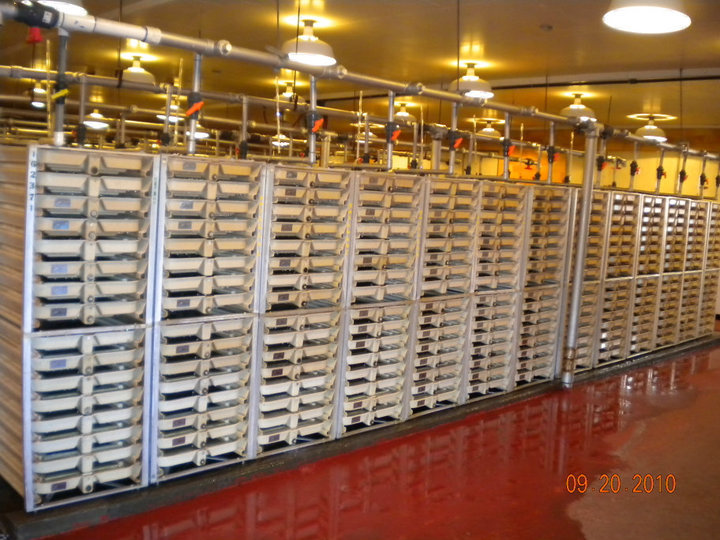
Incubation trays - Spring Creek NFH